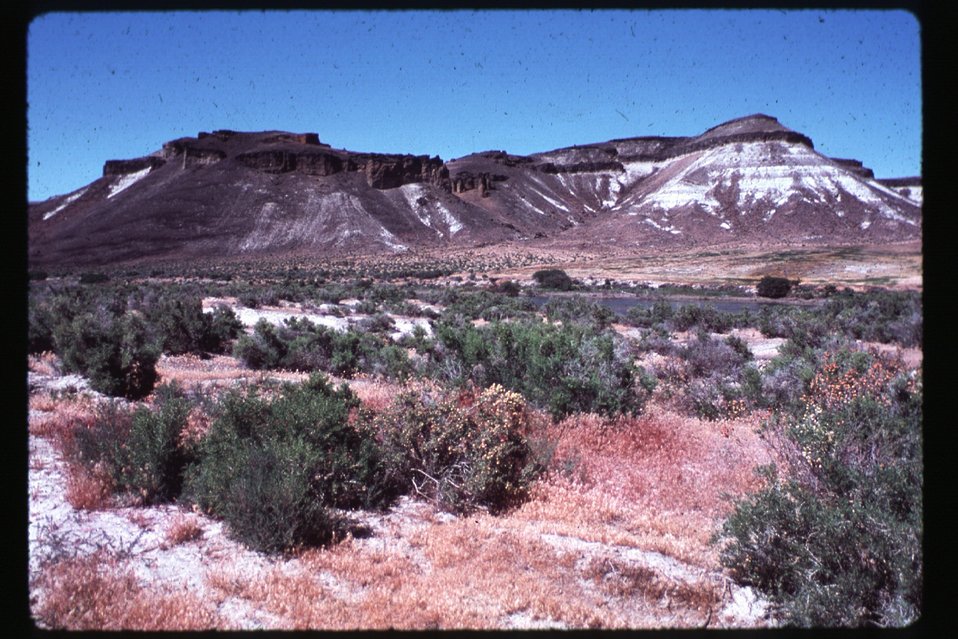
Jackass Butte Owyhee Field Office LSRD Lower Snake River District